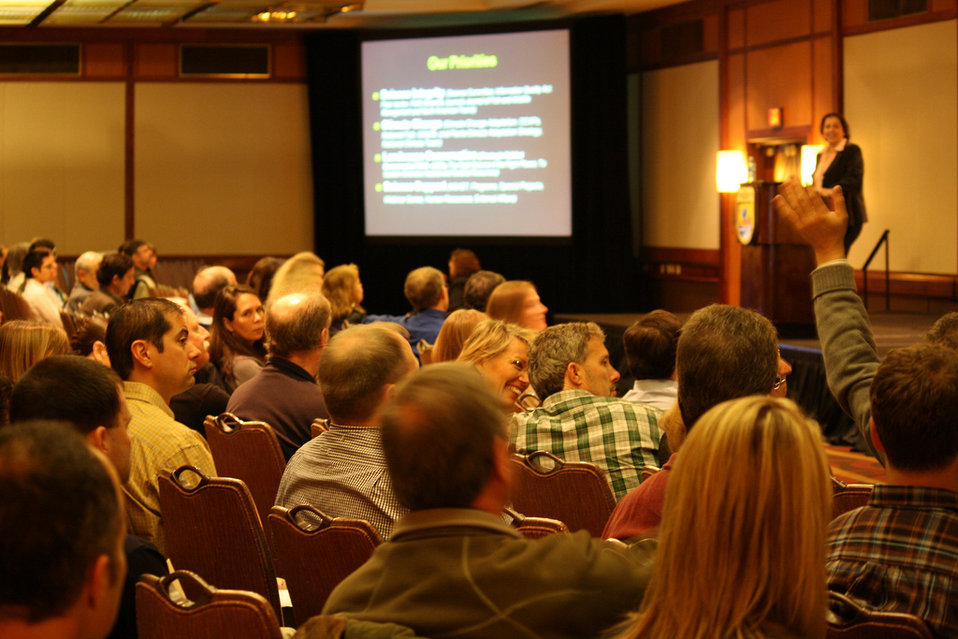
Dr. Gabriela Chavarria, U.S. Fish and Wildlife Service Science Advisor, speaking at the Northeast Region Biologists Conference.